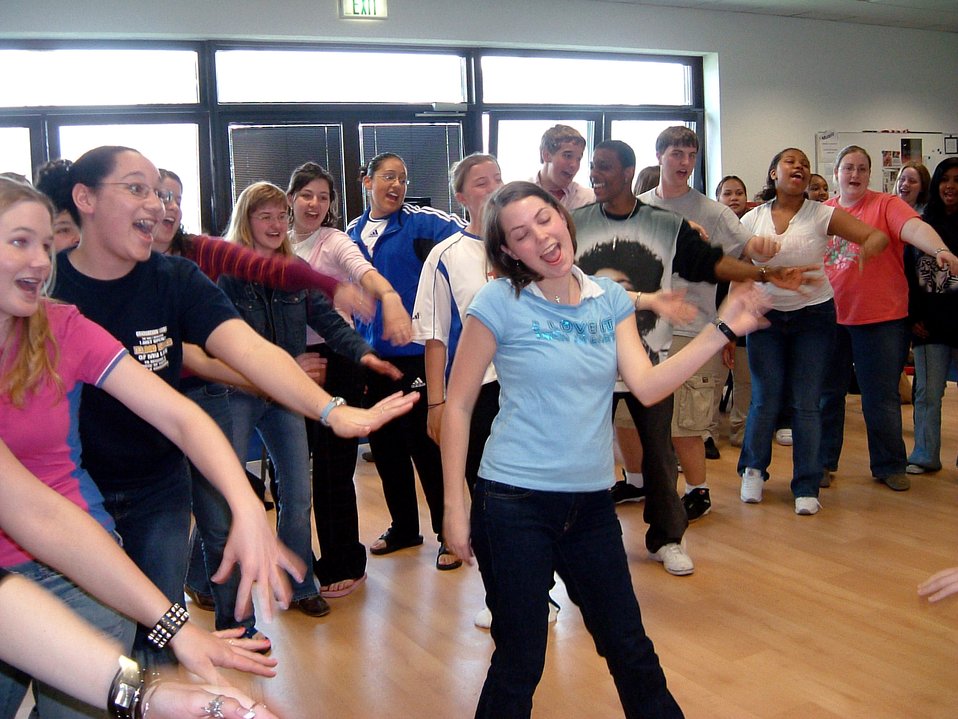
School program helps children cope with deployments

Ramstein High School students dance the